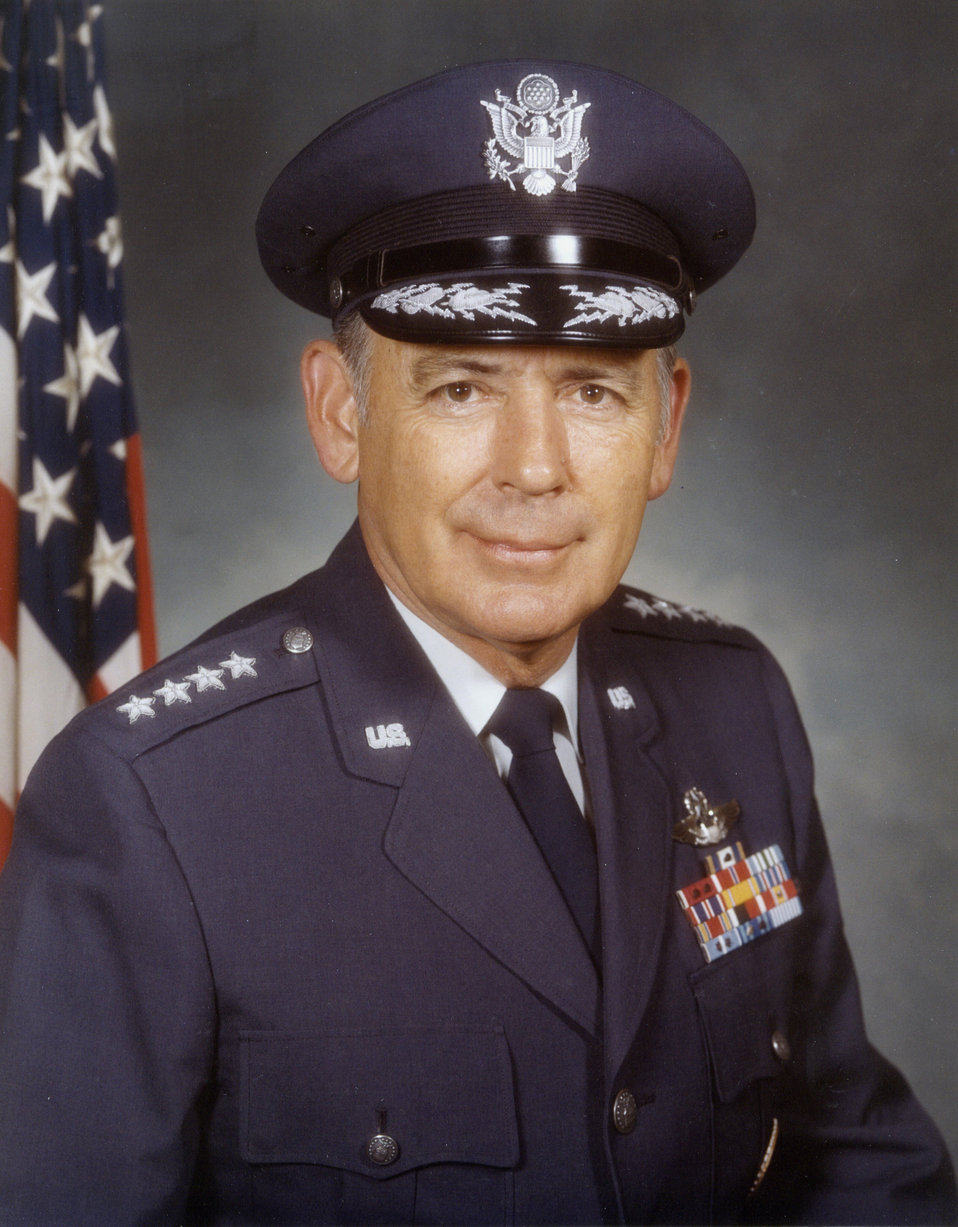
Former SAC commander General Dougherty dies

Retired Gen. Russell E. Dougherty, shown here in his official photo, died Sept. 7 at his home in Potomac Falls, Va. His last assignment was commander in chief of Strategic Air Command,